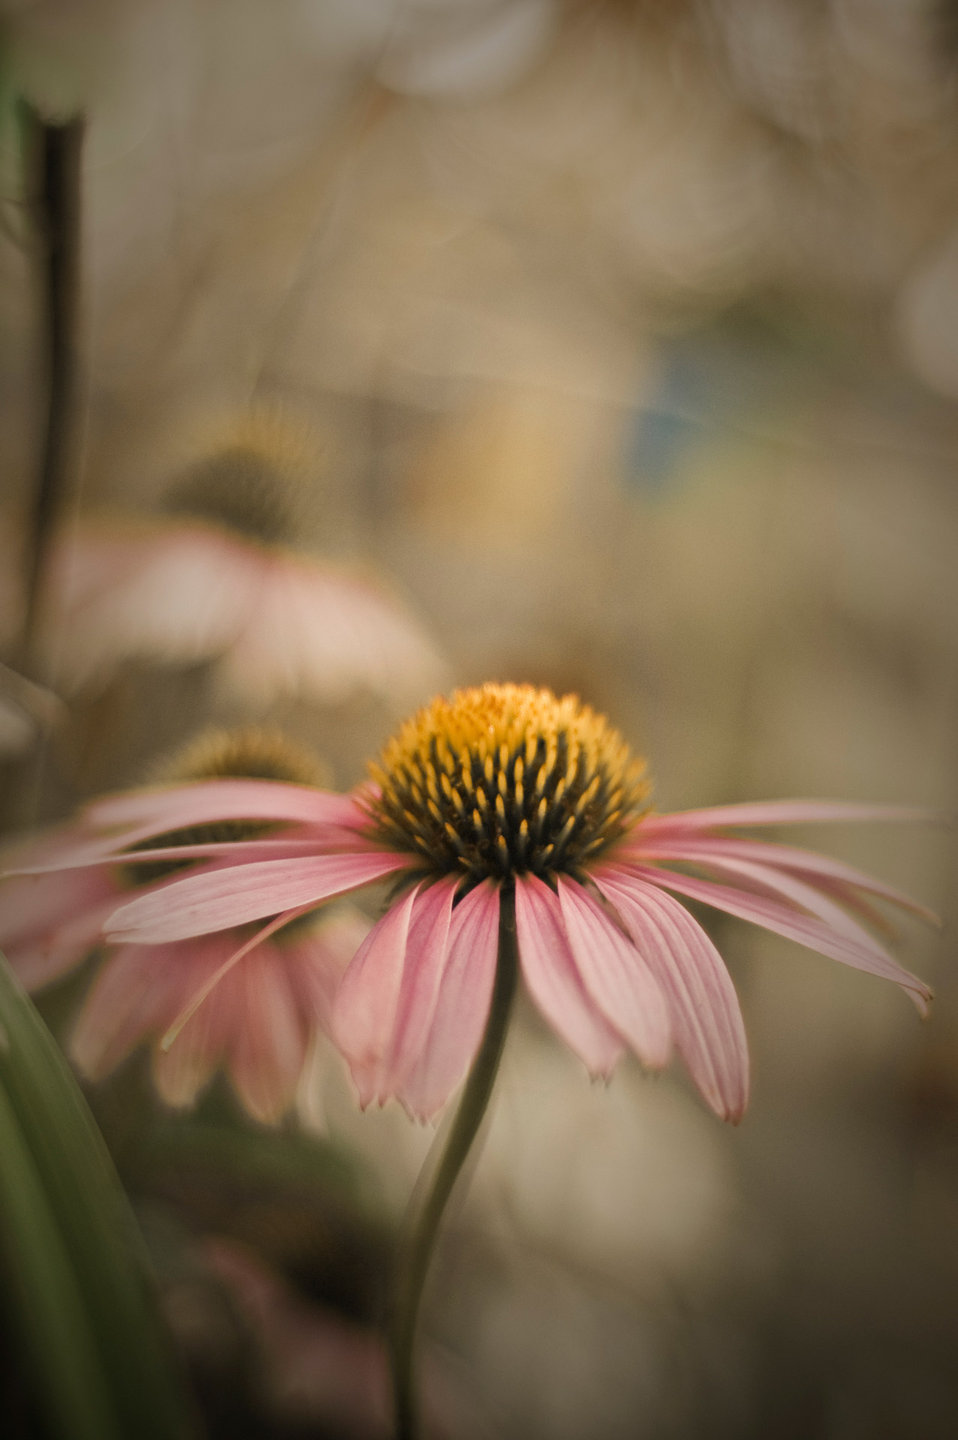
Pink flower

A single pink flower..